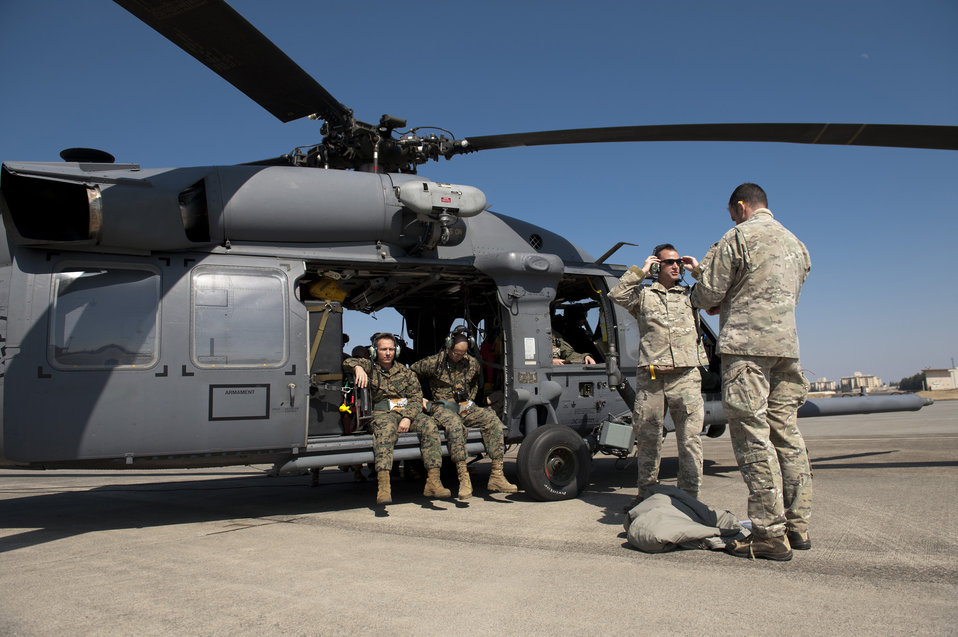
Yamagata a fuel staging area

Airlift leadership and a joint team of U.S. Air Force and Marine search and rescume members prepare to board an HH-60 Pave Hawk helicopter from the 33rd Rescue Squadron March 13, 2011, Yokota Air Base, Japan. Yokota is receiving personnel, aircraft and supplies to support search and rescue efforts as requested by the government of Japan.